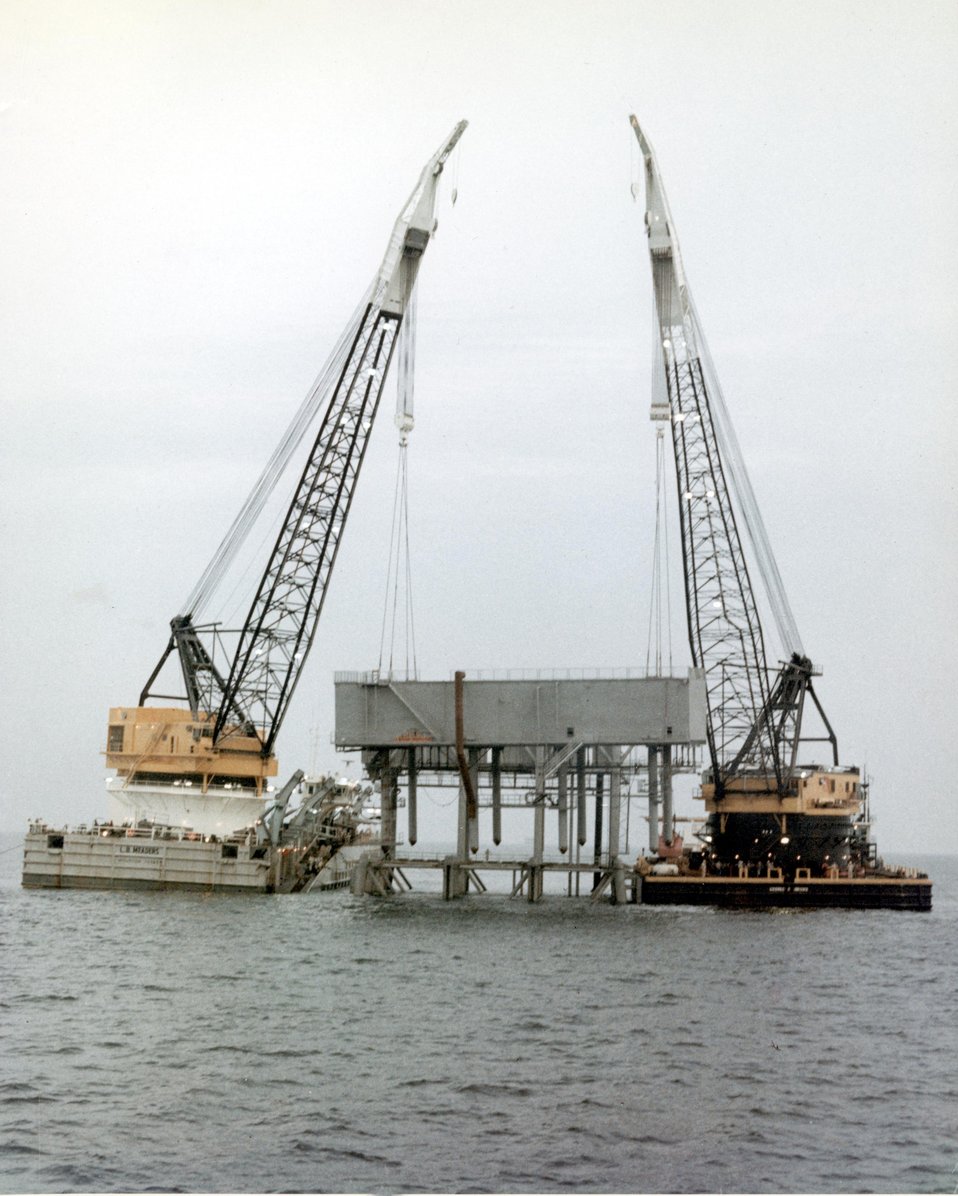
Offshore oil rig under construction. c. 1967